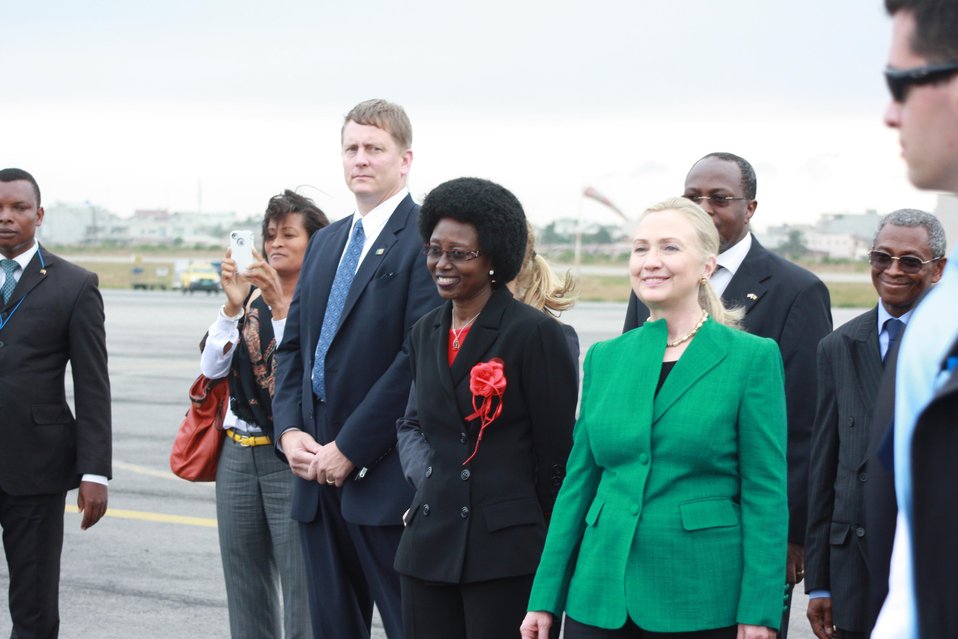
Secretary Clinton Is Greeted By Special Advisor Miriam Aladji Boni Diallo

U.S. Secretary of State Hillary Rodham Clinton is greeted by Benin's Special Advisor for Diplomatic Affairs Miriam Aladji Boni Diallo upon arriving in Cotonou, Benin, on August 10, 2012.